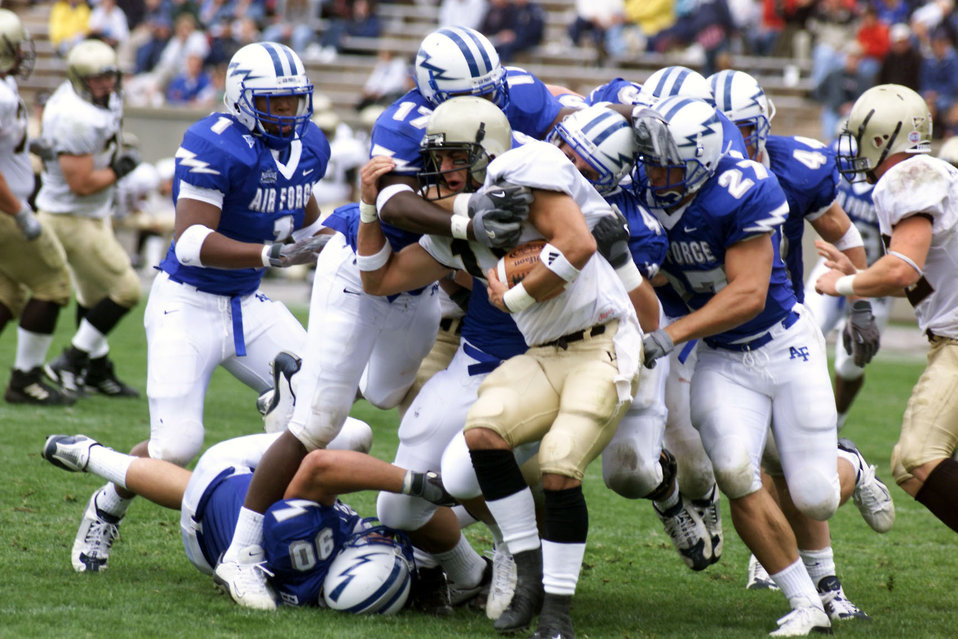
Blue crush

U.S. AIR FORCE ACADEMY, Colo. -- Wofford College quarterback Jeff Zolman finds himself buried in a blue wave of Falcon defenders. The Air Force Academy Falcons shut out Wofford, 49-0, Aug. 30.